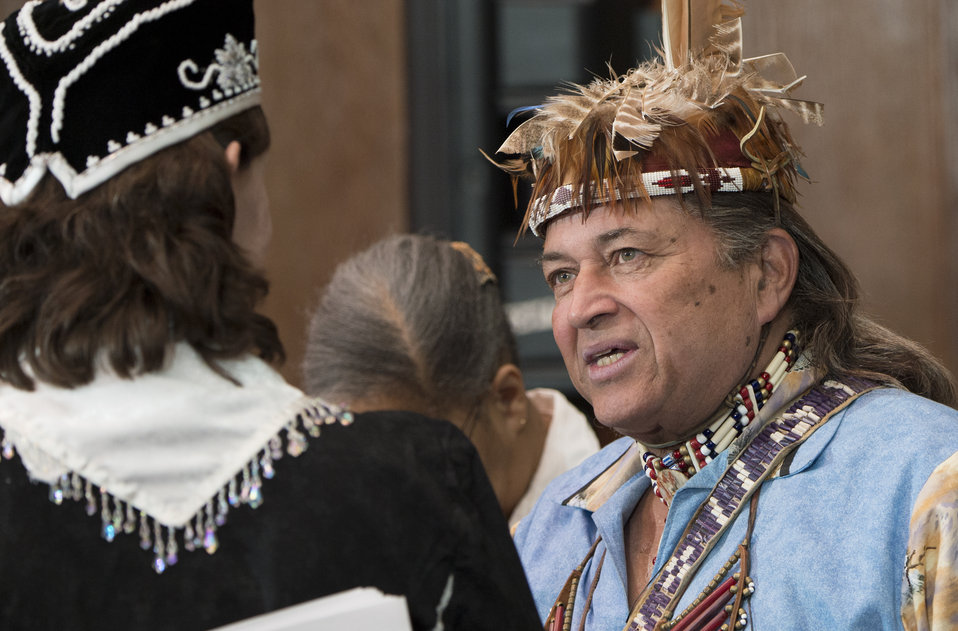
Cheroenhaka Nottoway Indian Tribe Chief Walter D. “Red Hawk” Brown III presents a history of the First American Tribes of Virginia talks with U.S. Department of Agriculture (USDA) Office of Tribal Relations (OTR) Director Onieda Nation of Wisconsin Leslie Wheelock at the 2013 American Indian and Alaska Native Heritage Observance at USDA on Thursday, Nov. 14, 2013 in Washington, D.C. The theme of this year’s event was 'Guiding Our Destiny with Heritage and Traditions.'